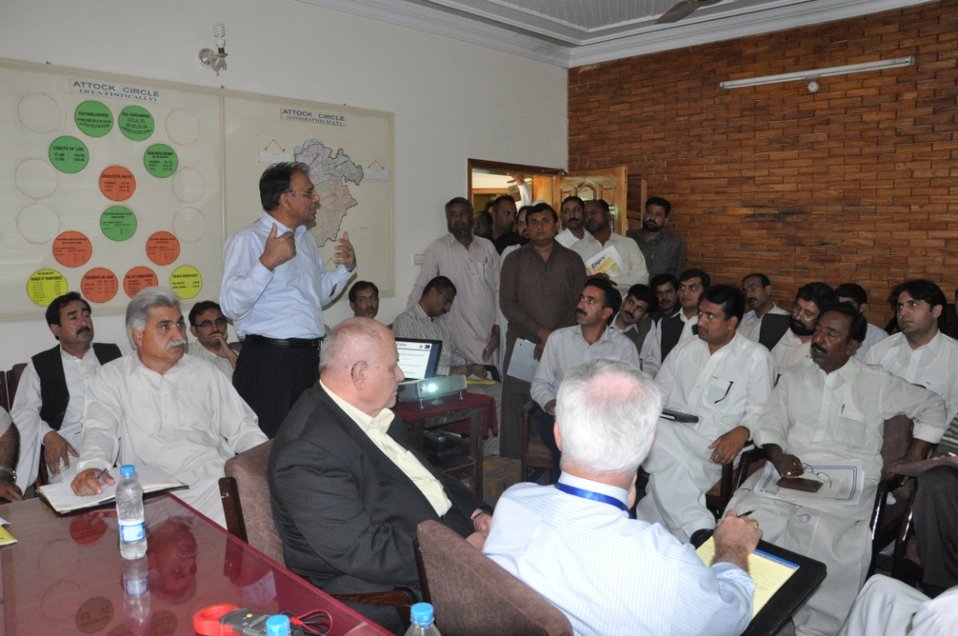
Usaid To Provide Technical Assistance To Improve Efficiency Of Tube-Wells In Iesco By Installing 2600 Lt Capacitors at Islamabad on April 26, 2012